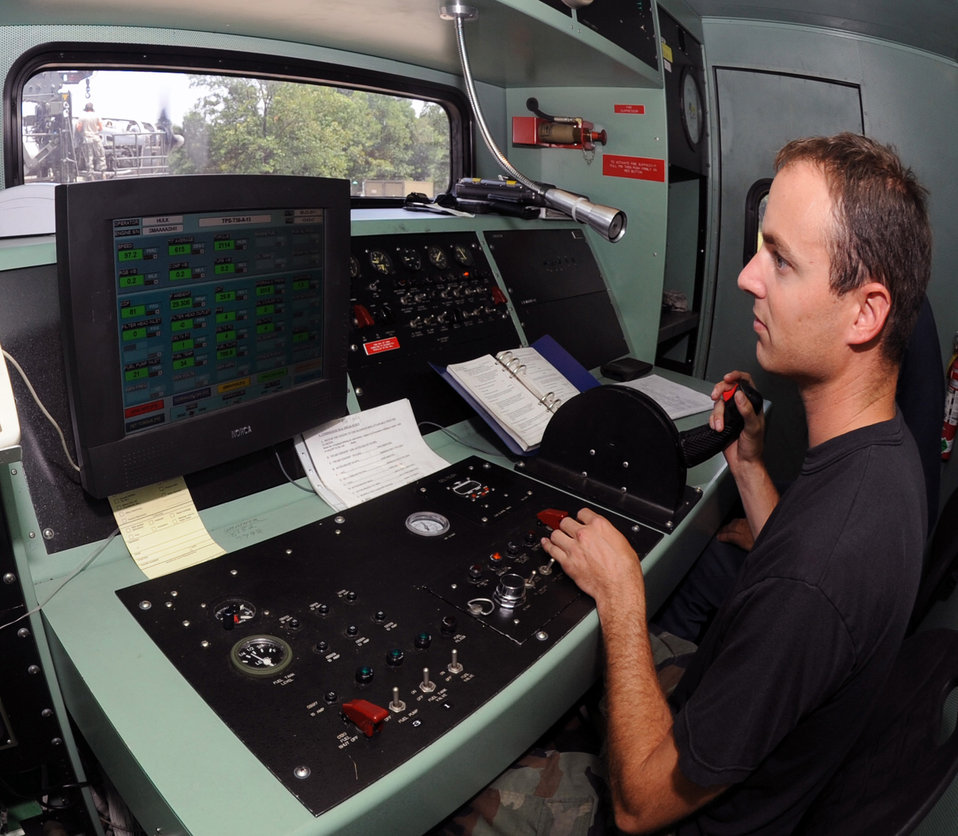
C-130 engine maintenance

Staff Sgt. Daniel Hermann controls the throttle of a C-130 Hercules engine during an engine performance check May 25, 2011, at Little Rock Air Force Base, Ark. A C-130 engine performance check is a two-day process before the engine is sent back to the engine shop for final inspection. Sergeant Hermann is an aerospace propulsion craftsman assigned to the 19th Component Maintenance Squadron.